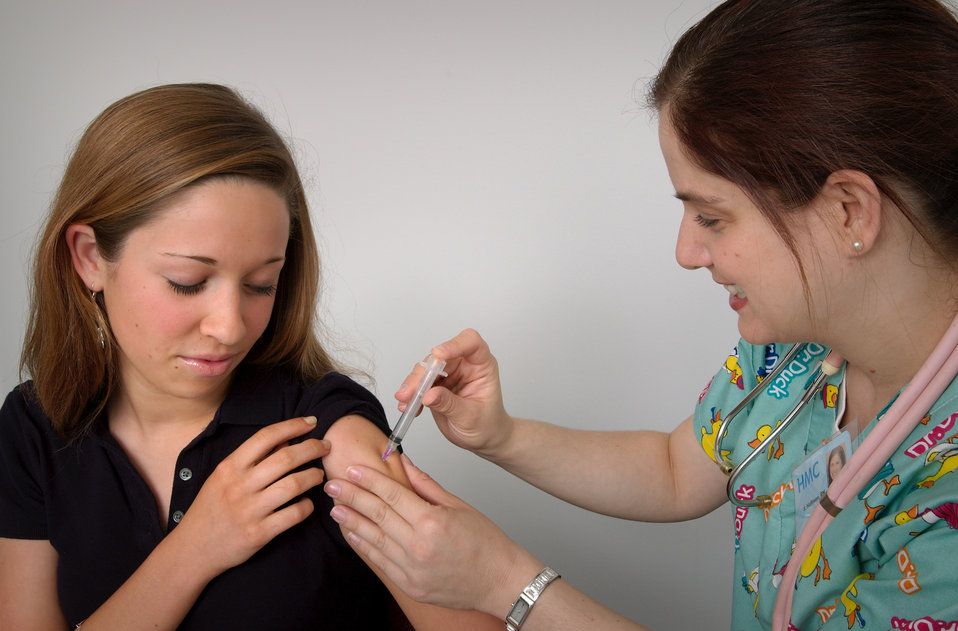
Nurse and immunization patient

This 2006 image depicted an adolescent female in the process of receiving an intramuscular immunization in her left shoulder muscle, from a qualified nurse. The girl was assisting in the procedure by holding up her sleeve, while watching as the injection was administered. The nurse was using her free hand to stabilize the injection site.